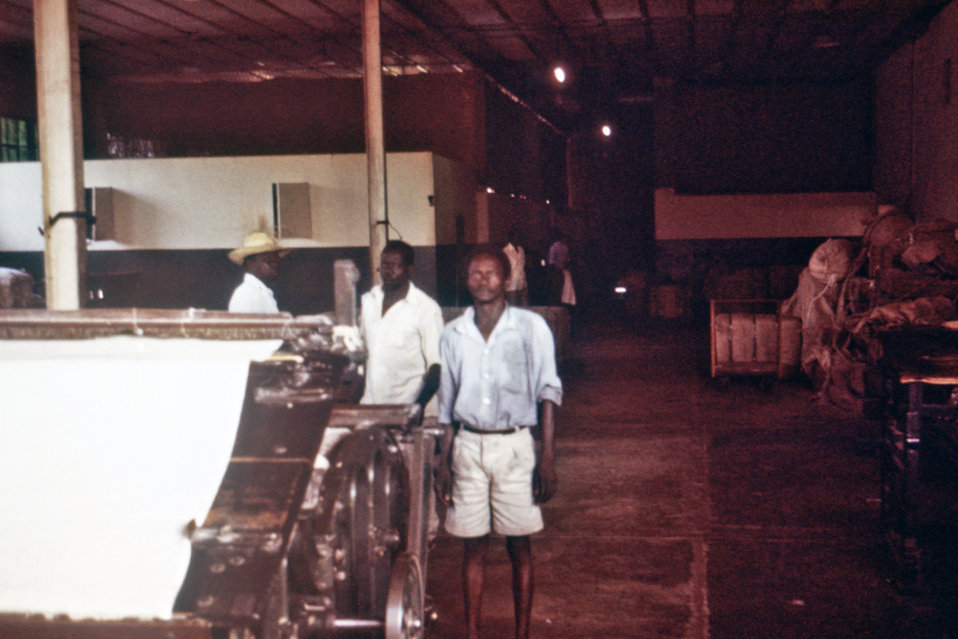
This photograph shows workers in the Nzara, Sudan cotton factory, which was determined to be the location where the earliest cases in the 1976 Sudan Ebola outbreak occurred.